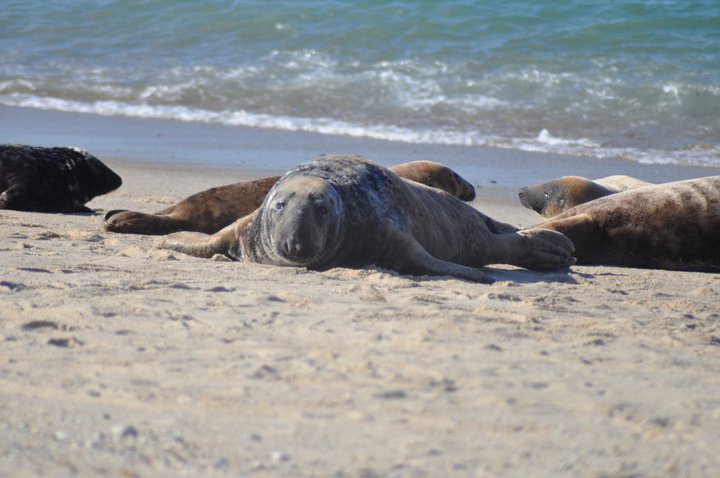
Seals at Nantucket National Wildlife Refuge in Massachusetts.